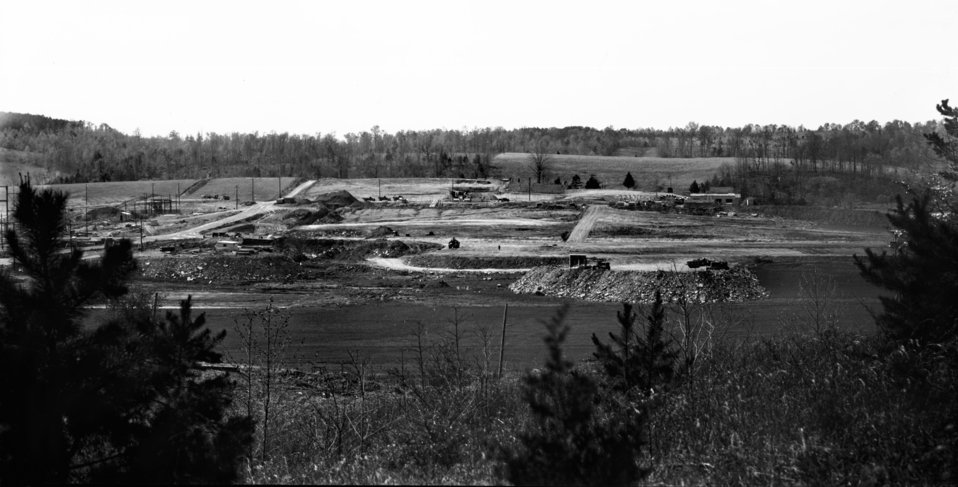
Early Construction ORNL Oak Ridge 1943

X-10-75 DOE photo Ed Westcott 1943 Oak Ridge Tennessee